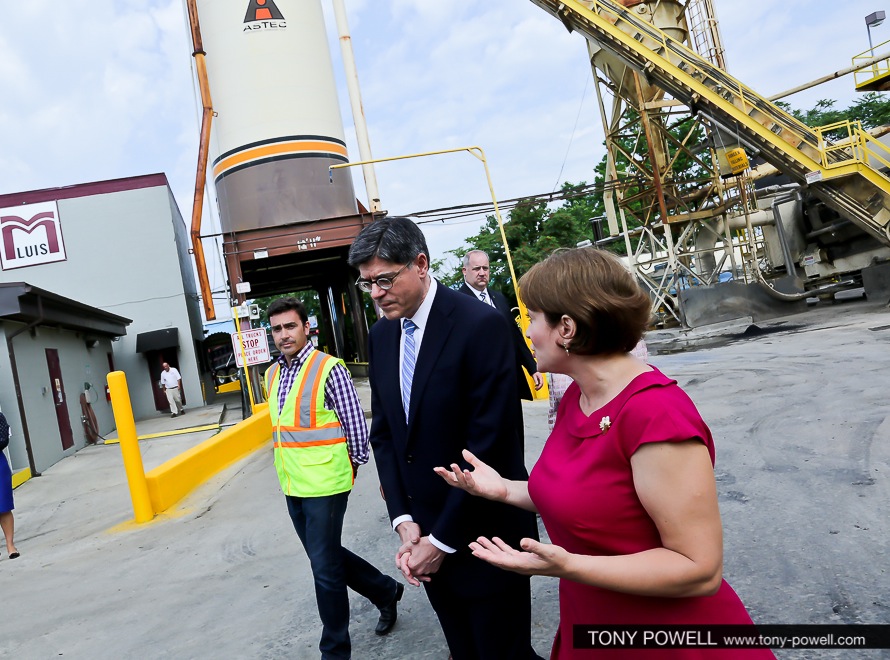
Secretary Lew tours family-owned business during Small Business Week

June 17, 2013 - During National Small Business Week, Secretary Lew toured the M. Luis Construction’s asphalt manufacturing facility in Maryland.